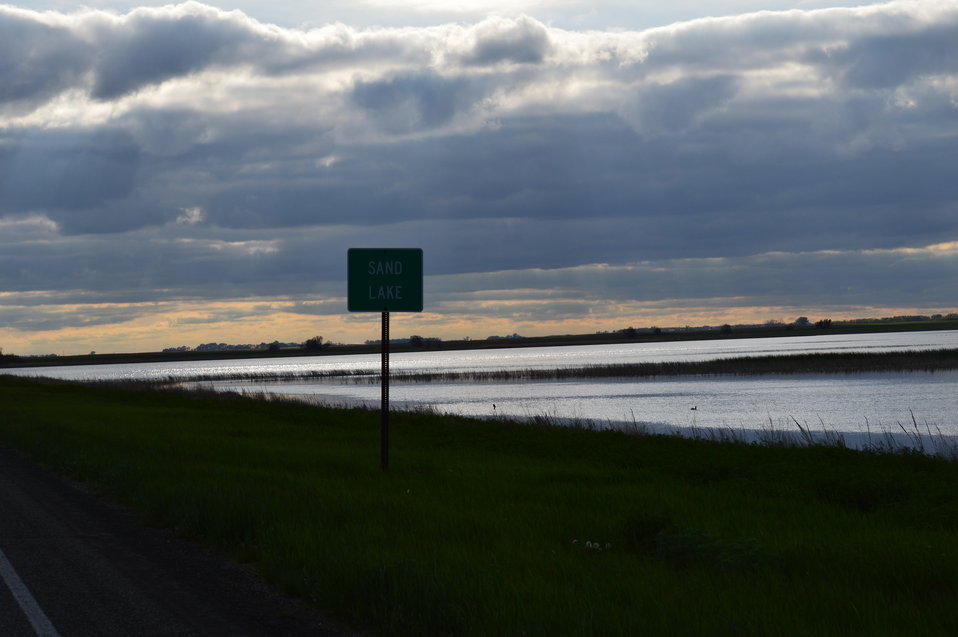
'Sand Lake' sign at dusk

Scenery and wildlife at Sand Lake National Wildlife Refuge in South Dakota